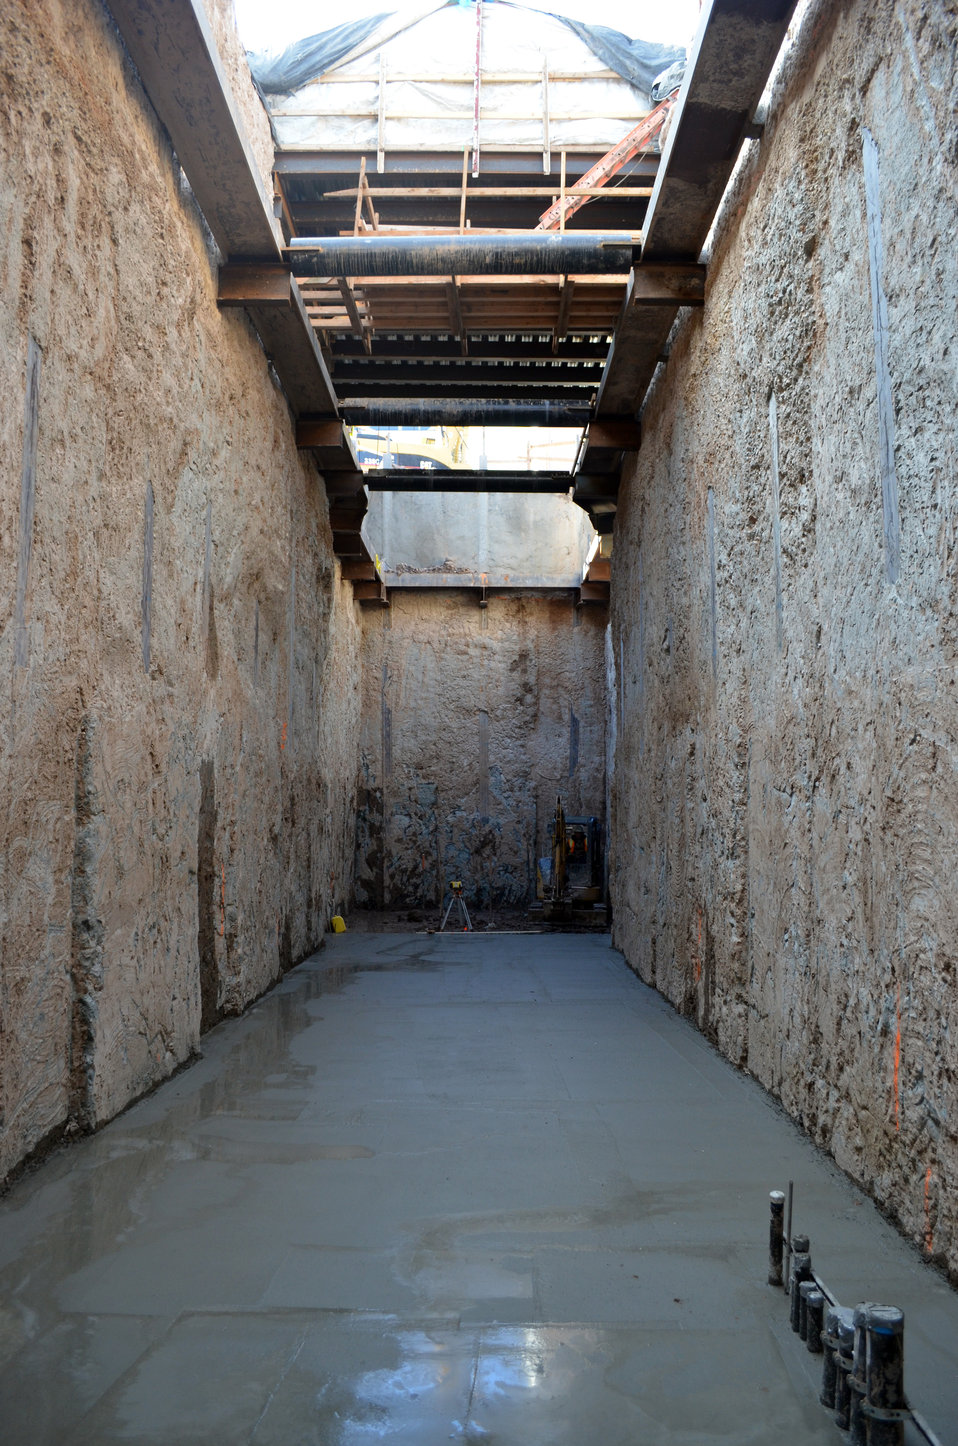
Turntable at Hill Air Force Base to test a different type of wave

Construction continues on an underground tunnel at the Radar Cross Section Test Facility project site at Hill Air Force Base, Utah, Nov. 16, 2011. The tunnel will provide direct access to the pylons below the facility’s 50-foot-wide turntable for inspection and maintenance. The U.S. Army Corps of Engineers Sacramento District is overseeing construction of the $25.8 million project, scheduled for completion in February 2013.